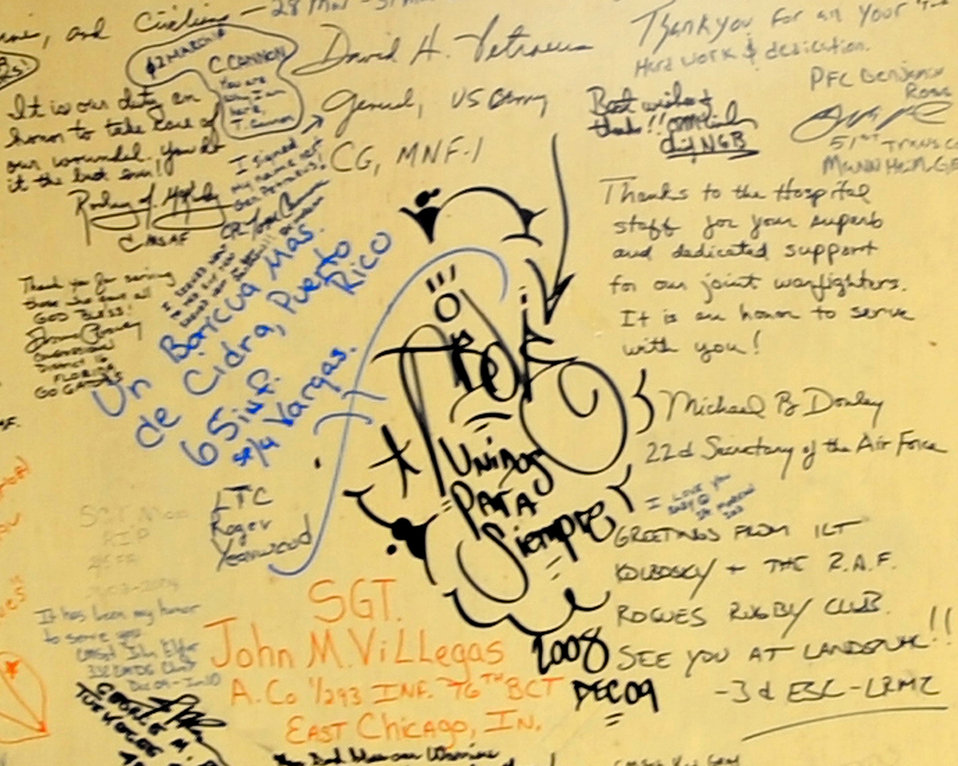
CASF memorial walls

Service members left their marks on the walls of the contingency airlift staging facility at Joint Base Balad, Iraq. Since the troop surge in 2007, wounded warriors and top military officials have written messages as a way to commemorate their fallen comrades and to thank the JB Balad hospital staff.